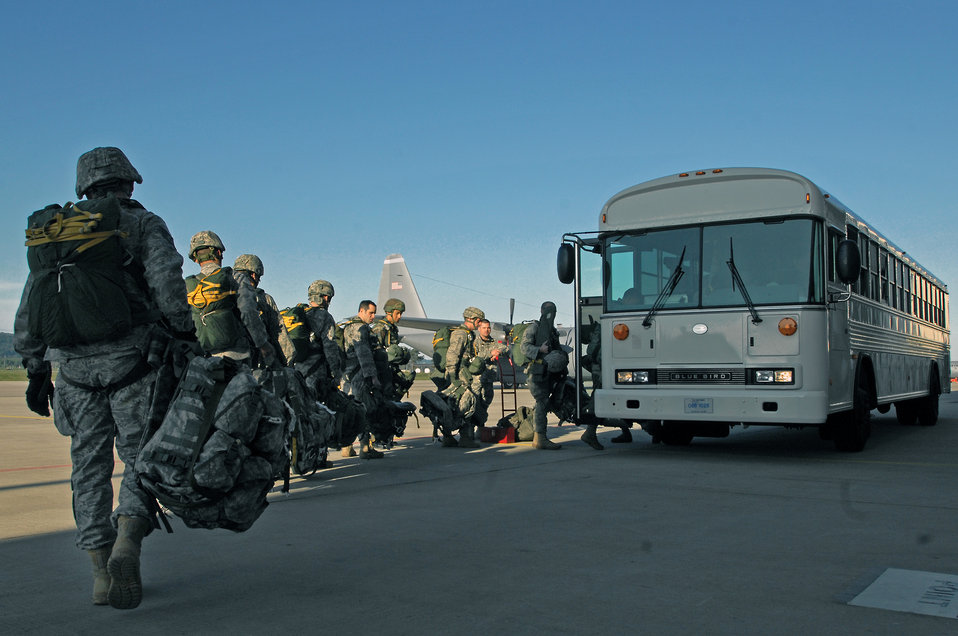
Airmen, Soldiers make first jump from Ramstein C-130J

Airmen and Army paratroopers load a troop bus in preparation for the first C-130J Super Hercules personnel drop May 4 at Ramstein Air Base, Germany.